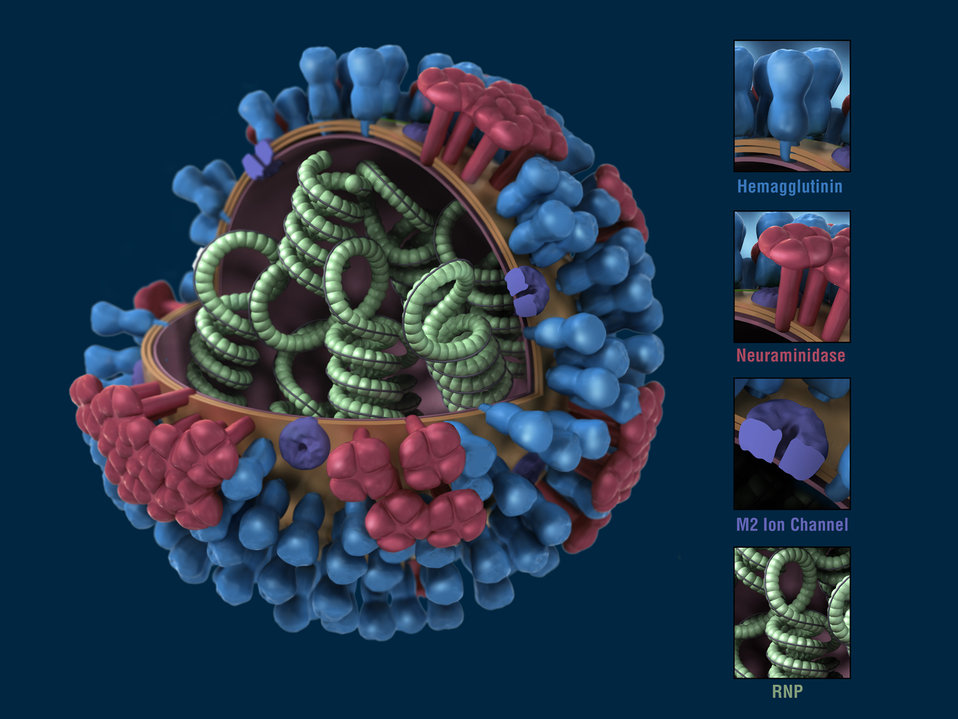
This illustration provides a 3D graphical representation of a generic influenza virion's ultrastructure, and is not specific to a seasonal, avian or 2009 H1N1 virus. In this particular view, a portion of the virion's protein coat, or 'capsid', has been cut away, revealing its inner nucleic acid core proteins. Note the key to the right identifying the virion's protein constituents. For a fully intact, complete view of this virus, see PHIL 11827.